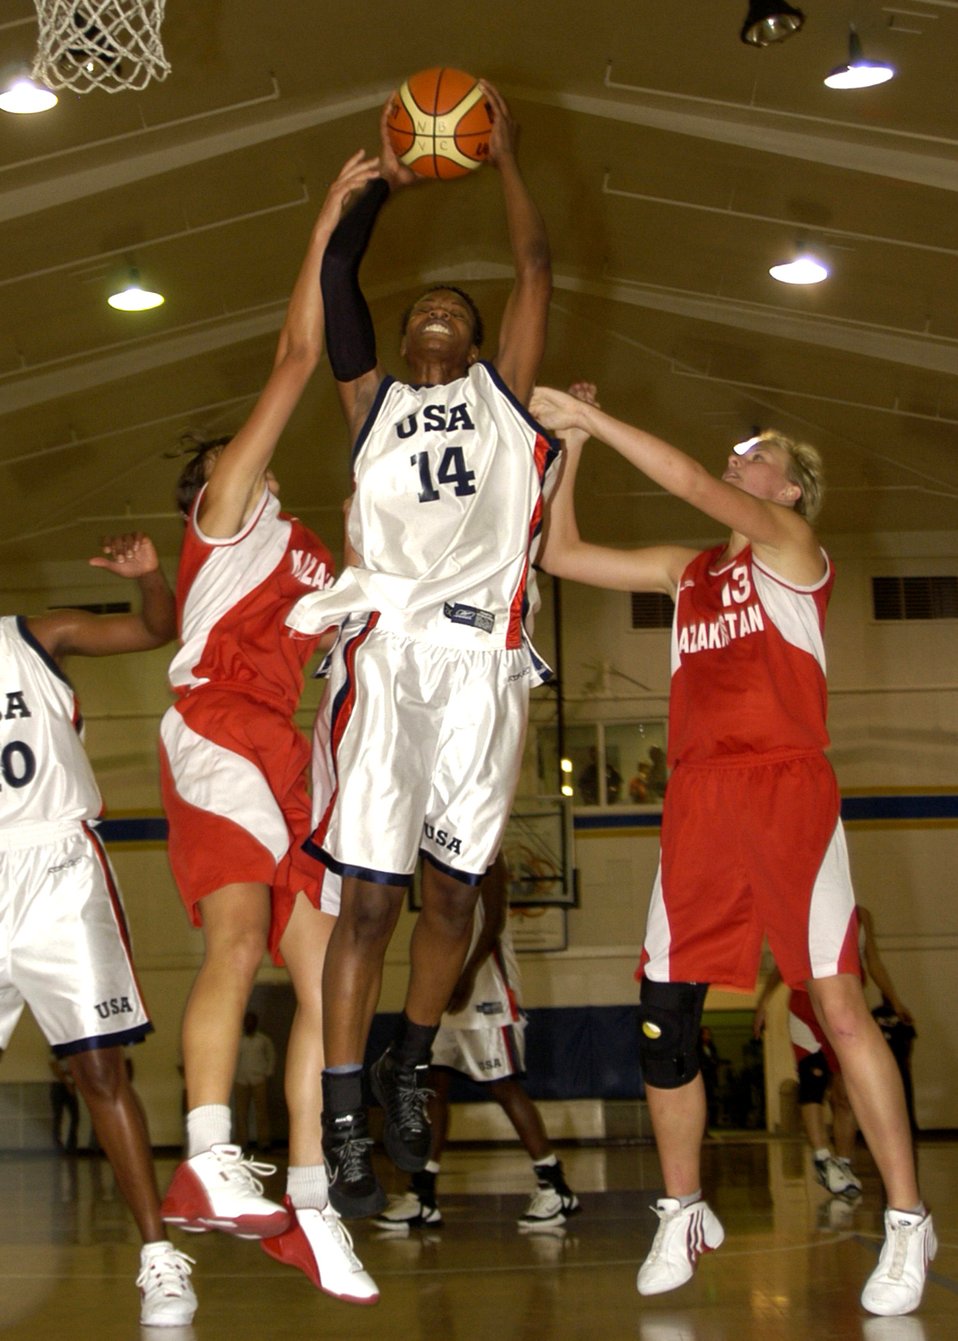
Iceman hoopster to tour with pros

NAVAL BASE VENTURA COUNTY, Calif. -- Airman 1st Class Naomi Mobley, 6-foot-3-inch power forward {14} takes a rebound away from two Kazakhstan players. A player with the U.S. Armed Forces Team, she helped her team win the gold medal at the Conseil International du Sport Militaire World Women's Basketball Championship here. The Airman was the 2005 All-Armed Forces Most Valuable Player. Airman Mobley is a vehicle operator in the 354th Logistics Readiness Squadron, Eielson Air Force Base, Alaska.